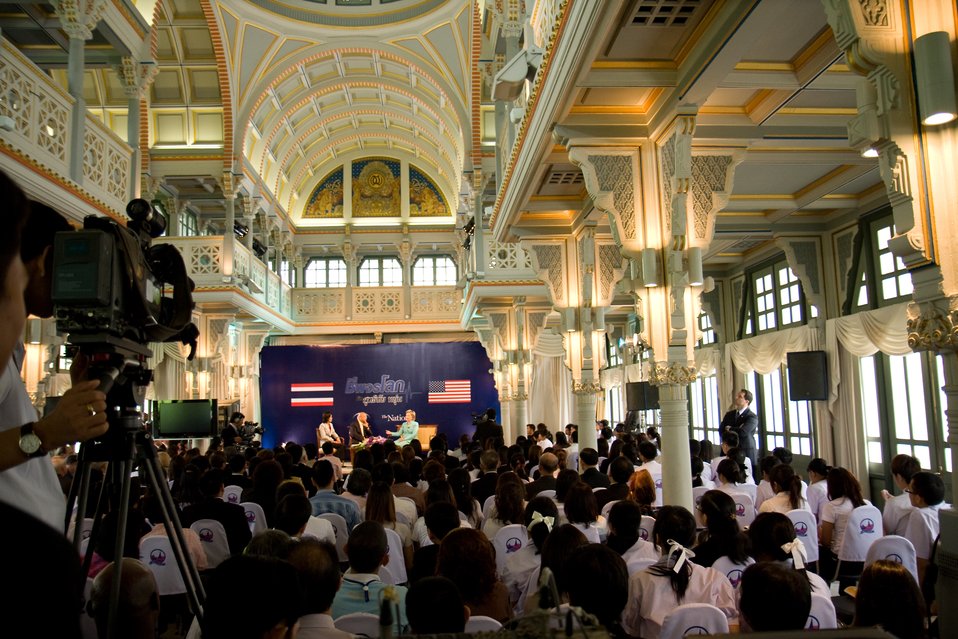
Secretary Clinton Interviews With the Nation Group

More than 200 people including students, young leaders, government officials, and civil society were in the audience during the taping of an interview with U.S. Secretary of State Hillary Rodham Clinton at Phyathai Palace in Bangkok, Thailand July 22, 2009.